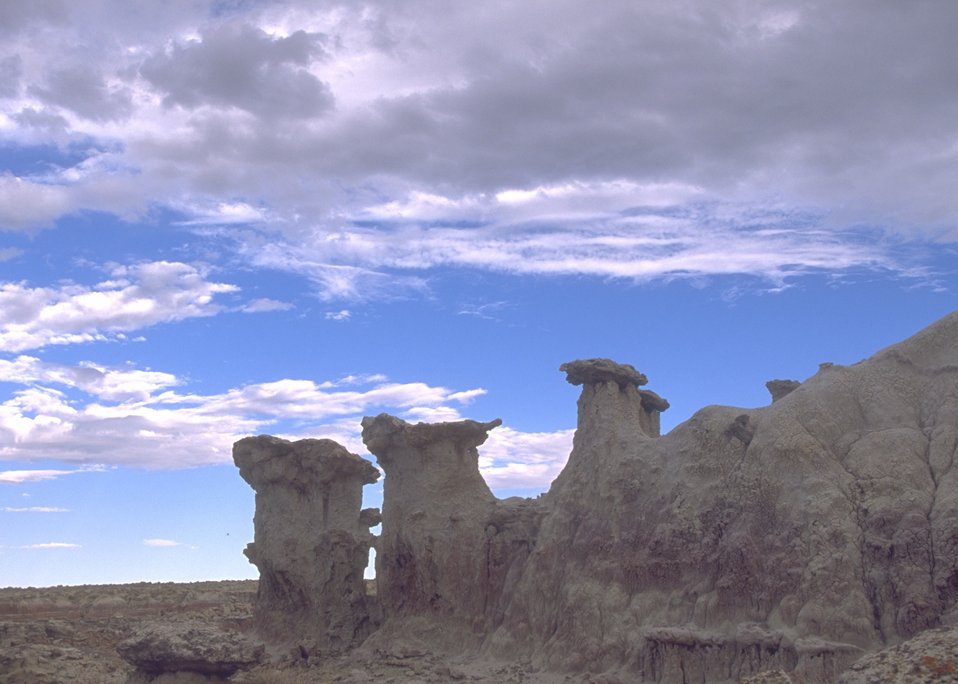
Gooseberry Interpretive Area, Worland Field Office.